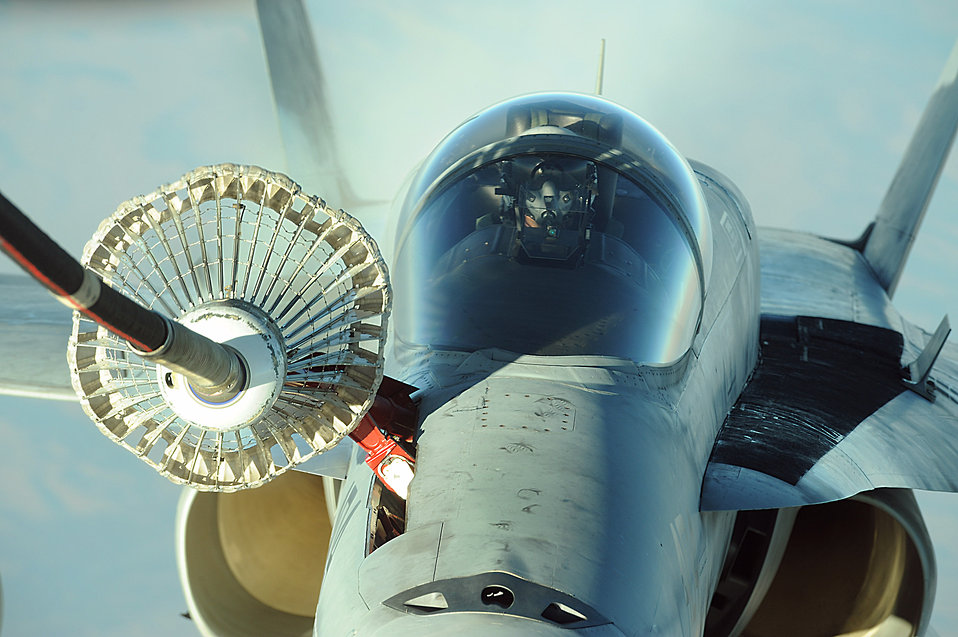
Fuel for fighters

A KC-10 Extender from the 908th Expeditionary Aerial Refueling Squadron refuels a Navy F/A-18 Super Hornet Dec. 11 over Afghanistan. Using either an advanced aerial refueling boom, or a hose and drogue centerline refueling system, the KC-10 can refuel a wide variety of U.S. and allied military aircraft within the same mission.